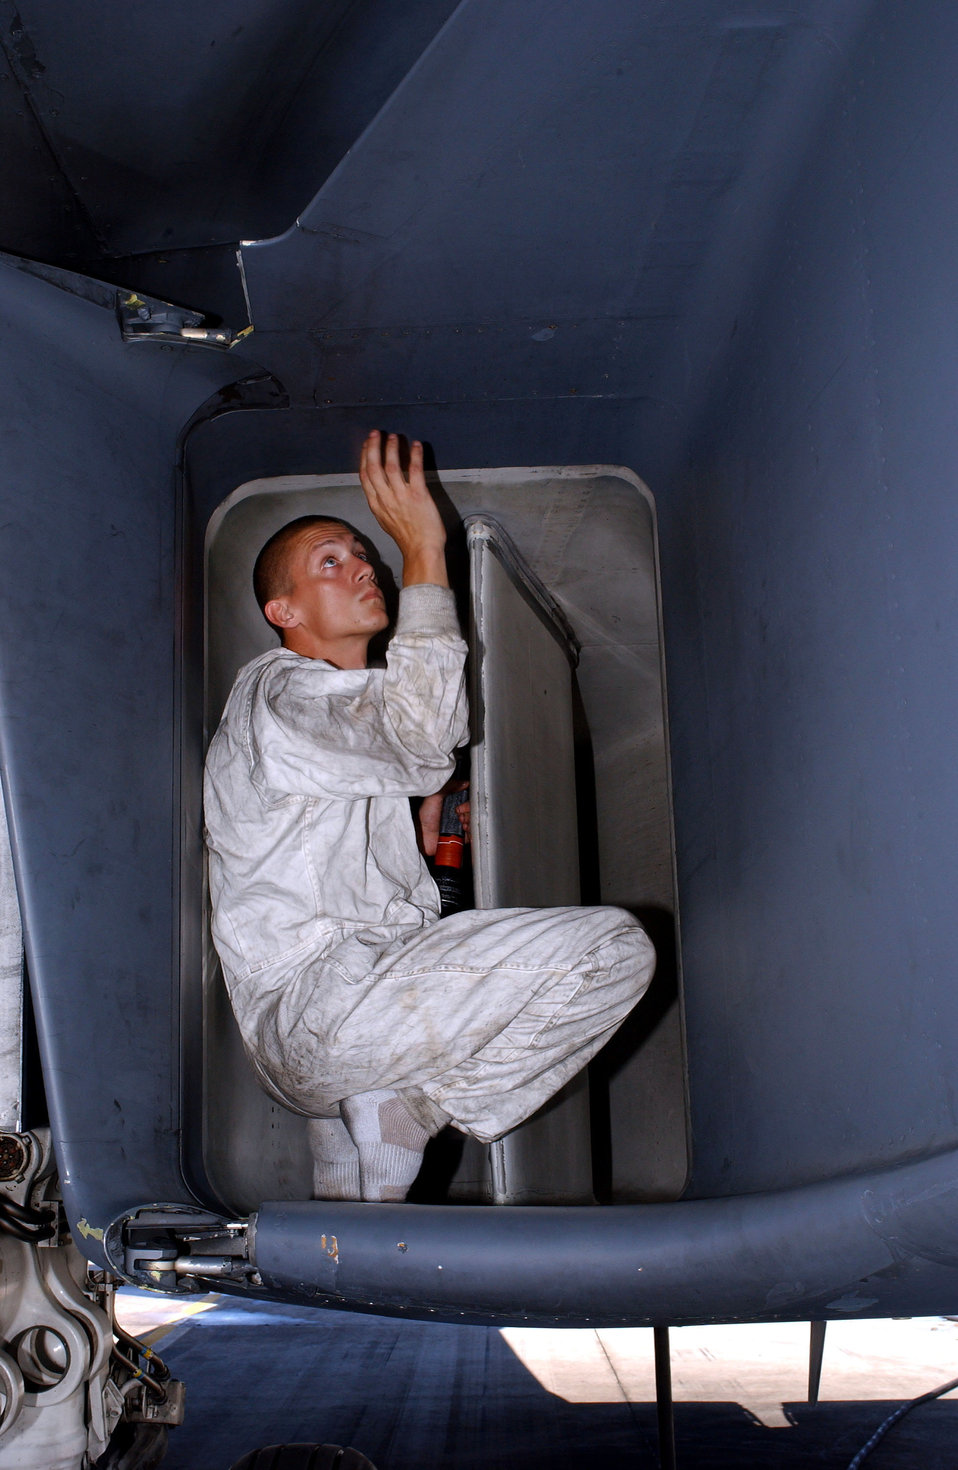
Safety check

OPERATION ENDURING FREEDOM -- An Air Force crew chief from the 28th Air Expeditionary Wing checks the engine intake area of a B-1B Lancer for cracks during a routine safety check. The B-1B is the backbone of America's long-range bomber force providing massive and rapid delivery of precision and non-precision weapons against any potential adversary anywhere around the globe on short notice.